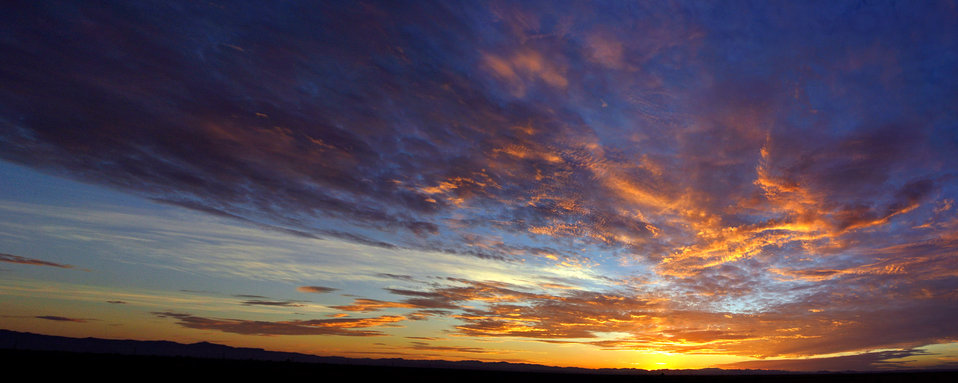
Arizona sunrise panorama 7-22-12

Arizona sunrise panorama.